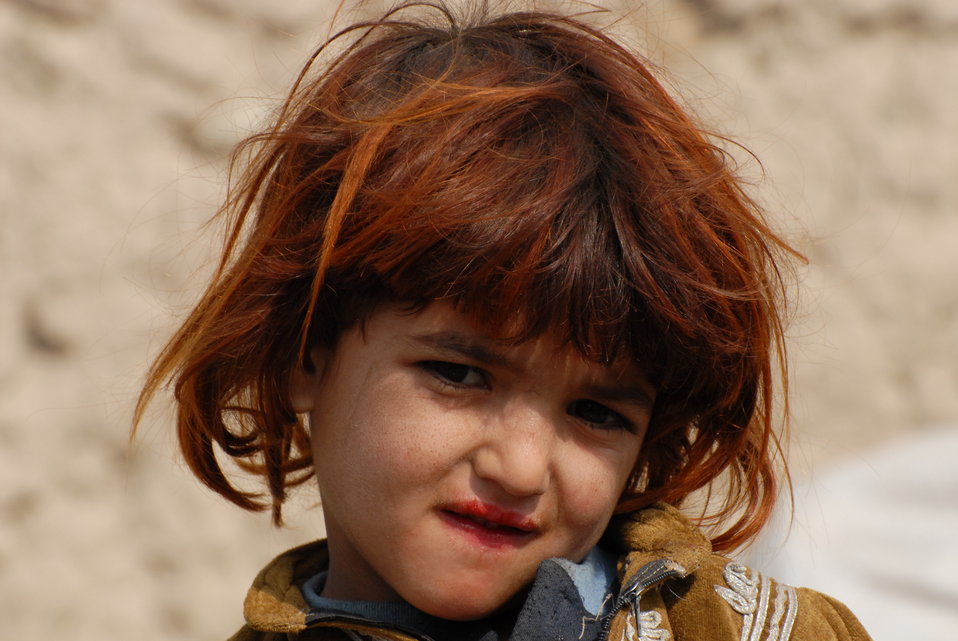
'On the Road' in Nangarhar Province